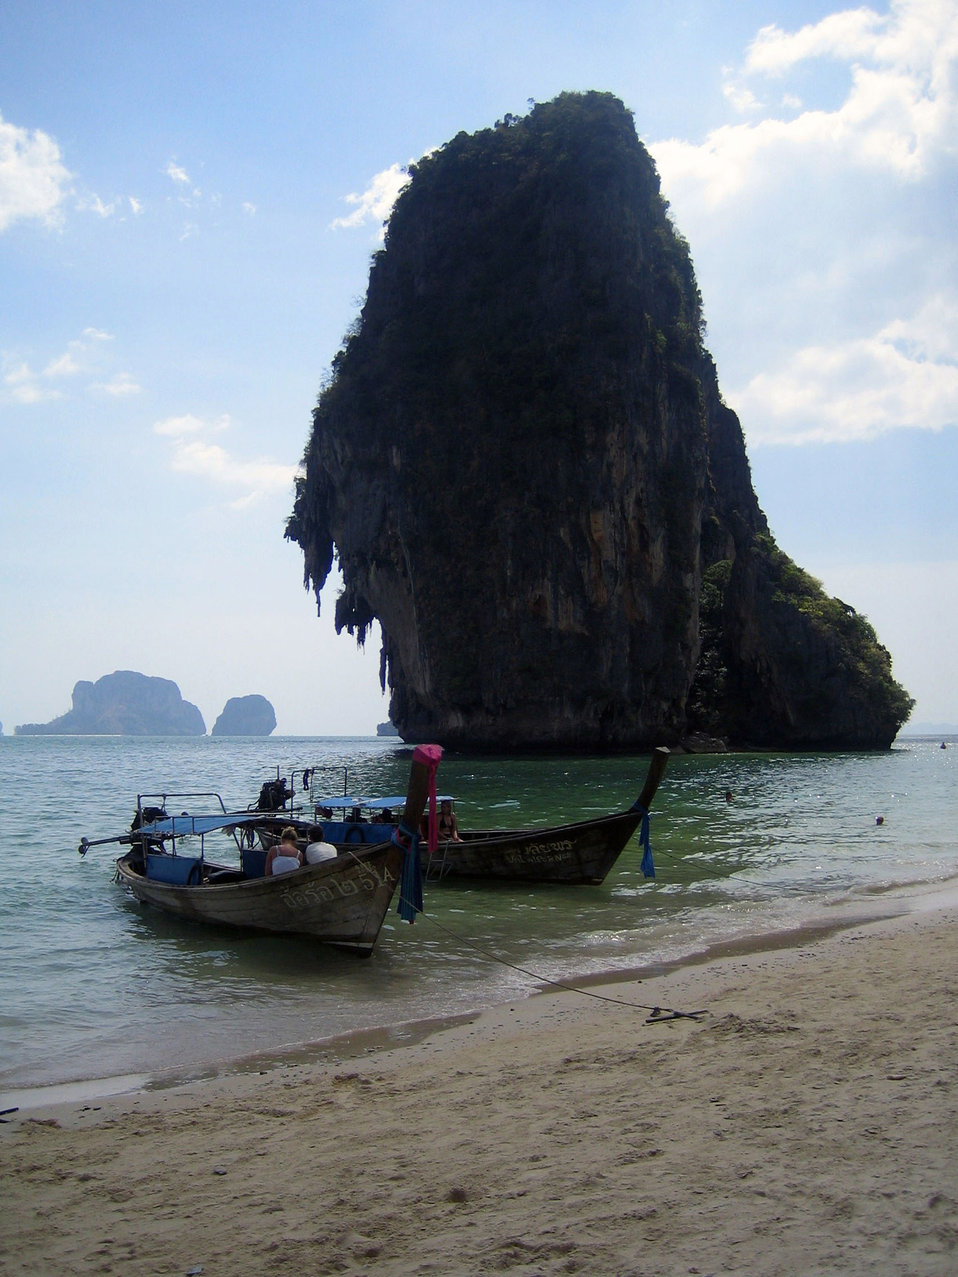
Thailand, krabi

Krabi rocks.